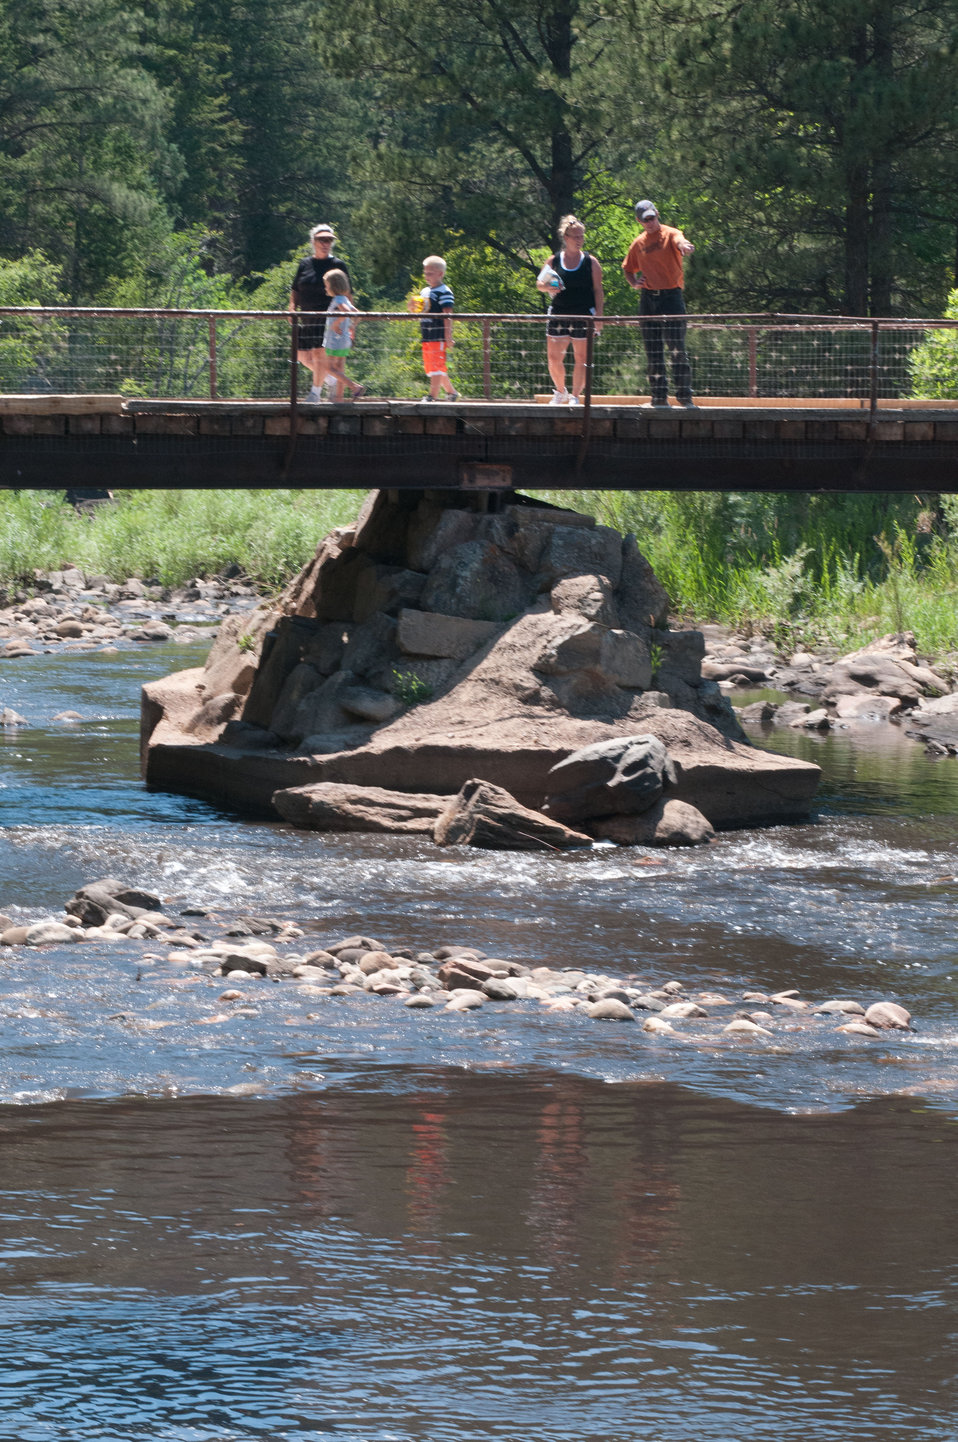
U.S. Department of Agriculture District Conservationist Todd Boldt, right, talks with Amy, Alison and Jackson Temples, and Patty Jackson, three generations of a family, walking across the bridge to see the effects of the Hewlett Gulch Fire, in the Poudre Canyon area, on Friday, July 20, 2012, near Fort Collins, Colorado. “Talking with people is one of the most important things I do. By talking with them, they will talk to maybe 50 others,“ said Todd Boldt. “Explaining the effects of the fire and the steps that the City of Greeley and USDA are doing, go a long way to educate the public.” Unmitigated runoff have turned the water in this river from clear water to nearly black water heavily laden with ash, silt, and burnt debris that recent thunderstorms have already washed down from the mountainsides. When he dug down into the riverbanks, he found ash 18 inches below the surface, at the water’s edge. At its peak more than 400 firefighters were battling fires pushed by 50 mph winds. When the last embers were cooled, more than 12-square miles lay blacked at a cost of approximately 3.2 million dollars to fight. The aerial distribution of straw has successfully kept nearby Seaman Reservoir clean for the drinking water of the City of Greeley. Forest Service lands receive straw, while private and other lands receive a seed mix and straw to promote ground cover plant growth on ash-covered lands. In total, 1,800 tons of straw will be applied during the 14-day operation. One quarter of the cost was paid by the City of Greeley and the U.S. Department of Agriculture funded the remainder.